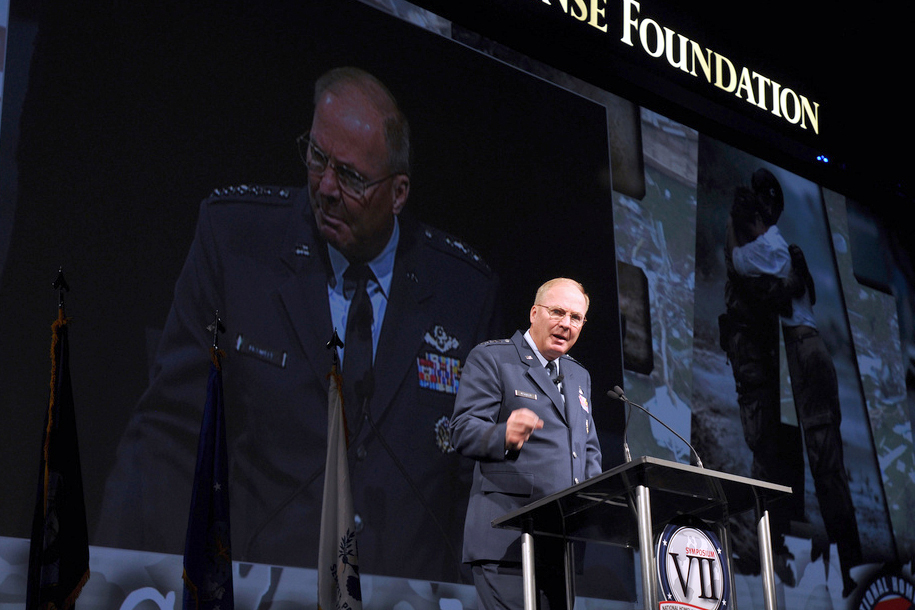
National Homeland Defense Foundation Symposium

Gen. Craig R. McKinley speaks at the National Homeland Defense Foundation Symposium in Colorado Springs, Colo., Nov. 9, 2009. General McKinley said collaboration has replaced conflict in the relationship between the National Guard and other service components. General McKinley is the chief of the National Guard Bureau.